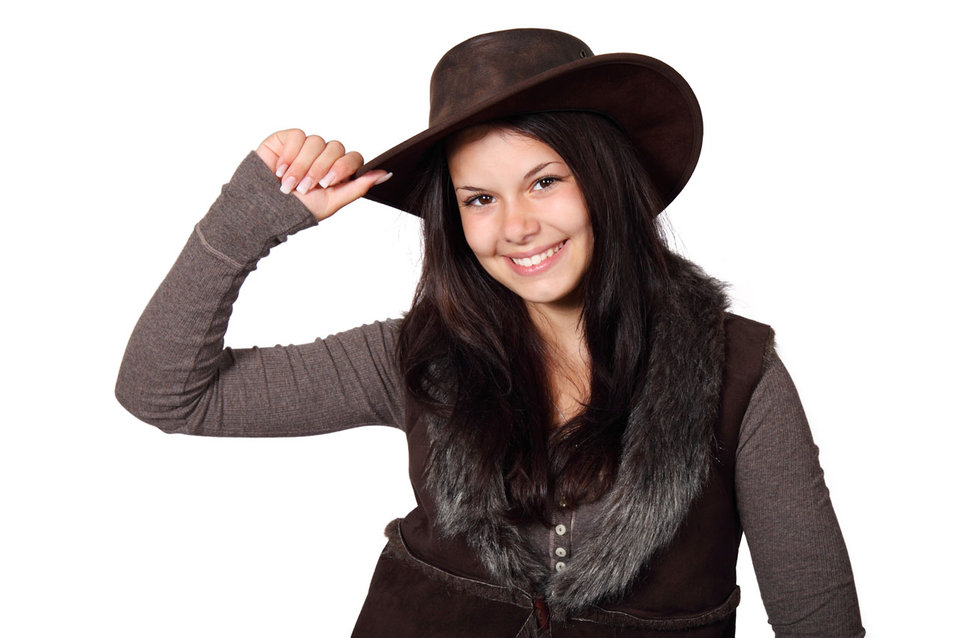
Country girl with hat smiling isolated on white background.